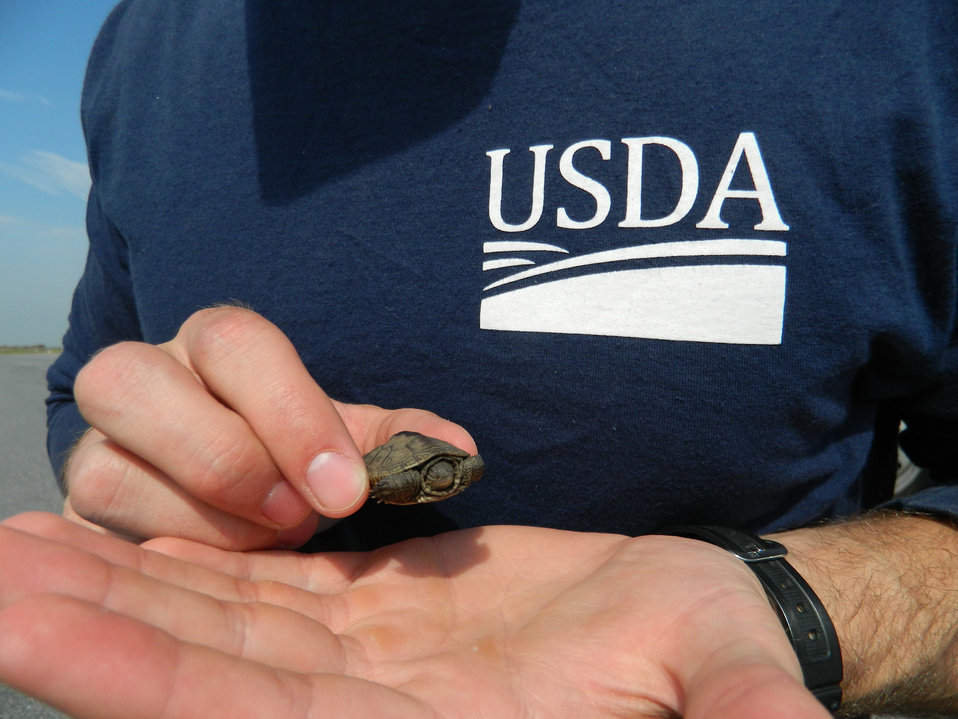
A U.S. Department of Agriculture (USDA), Animal, Plant, Health Inspection Service (APHIS) Wildlife Services biologist holds a newly hatched Diamondback terrapin (Malaclemys terrapin) rescued from a runway at John F. Kennedy (JFK) International Airport, in New York on May 23, 2012. Terrapin young emerge from their nests in spring and scavengers and raptors attracted to the young pose a safety hazard to aircraft. The biologists at JFK move the young back to the water and to safety.